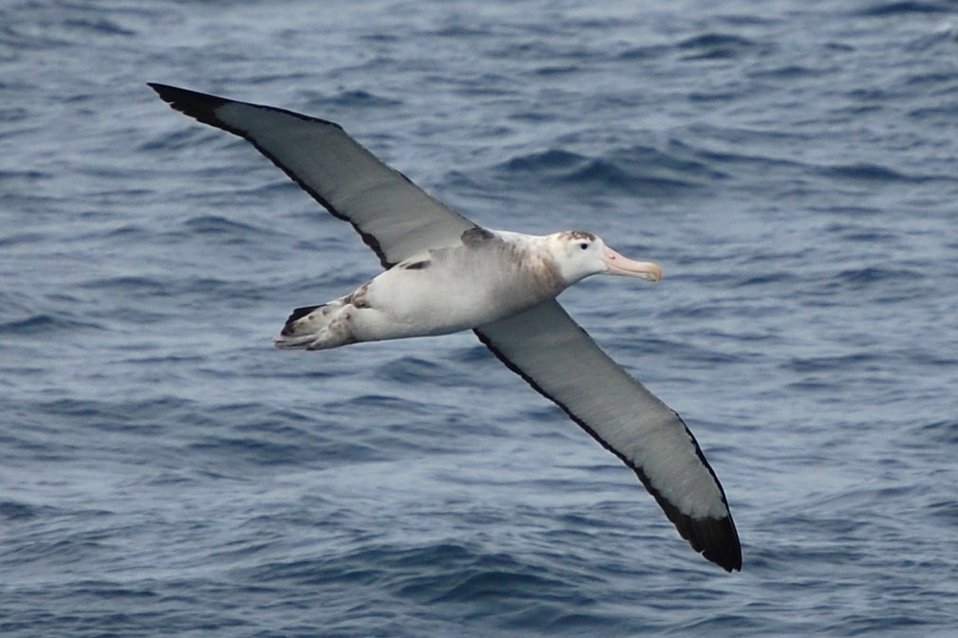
Wandering albatross.